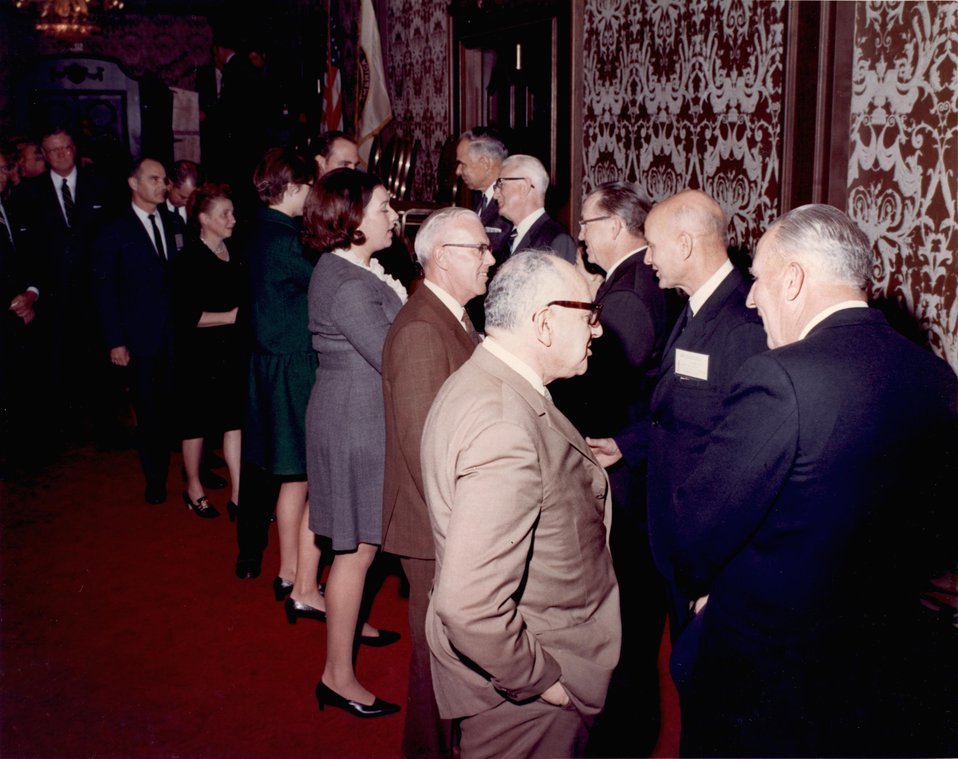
Enrico Fermi Award Ceremony. Imperial Ballroom. San Fransisco Hilton Hotel. 5:30 p.m., December 2, 1969. Fermi Award. Recipient: Walter Zinn. Date: Dec. 2, 1970.